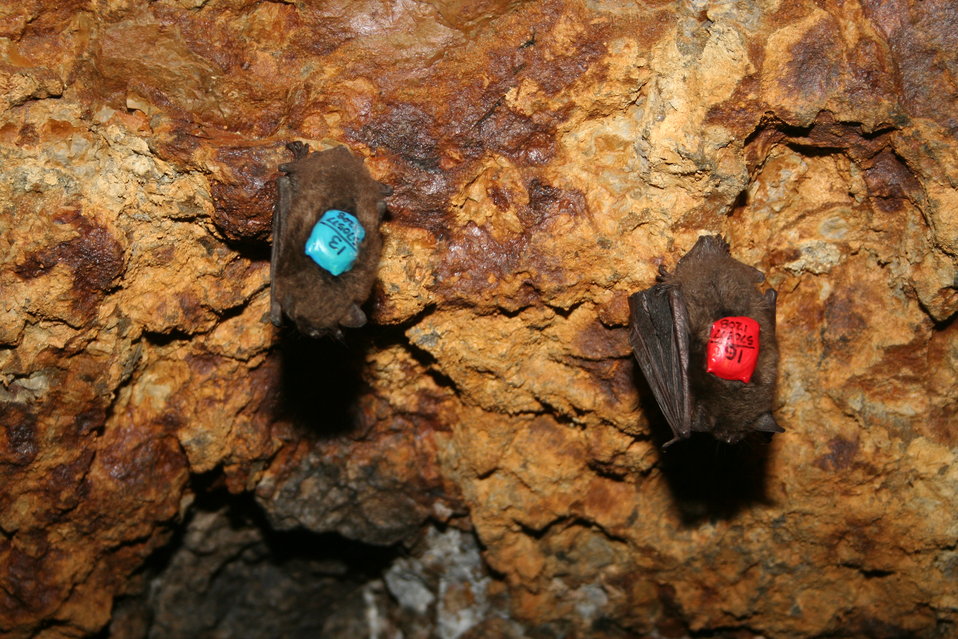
Two bats with recently attached dataloggers

Credit: Greg Turner, Pennsylvania Game Commission

Image size: 3456p (48 in.) W x 2304p (32 in.) H, 72 ppi, 4.2 MB